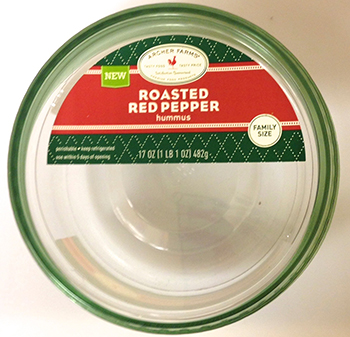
RECALLED – Hummus and dip products

May 19, 2014 – Product Recall – Lansal, Inc. Voluntarily Recalls Hummus & Dip Products Due to Possible Health Risk.